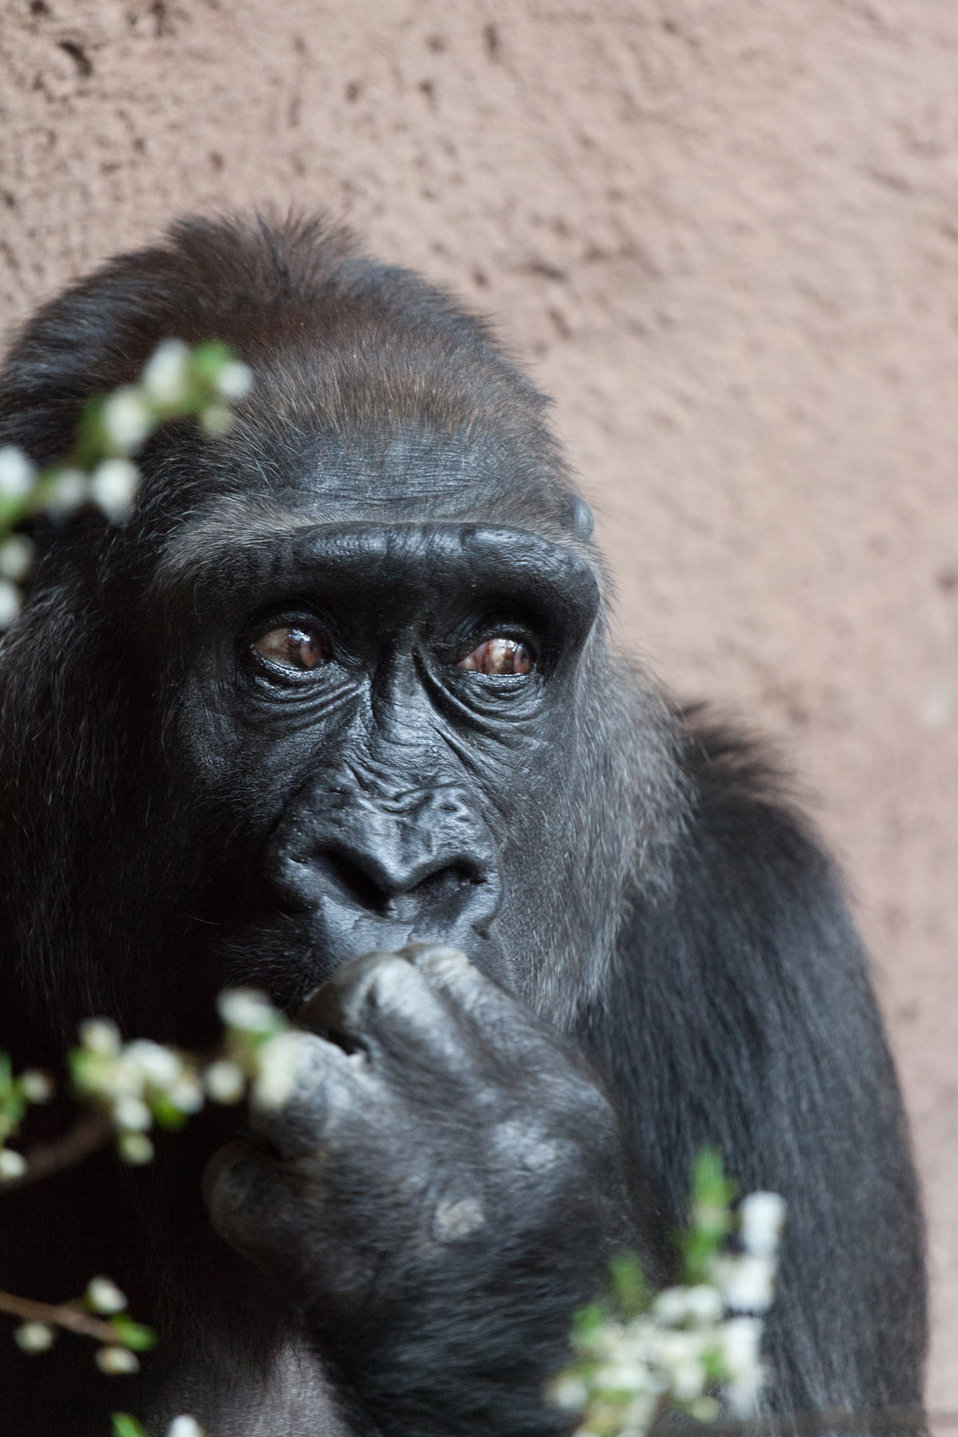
Gorilla female

Female gorilla is having a lunch.